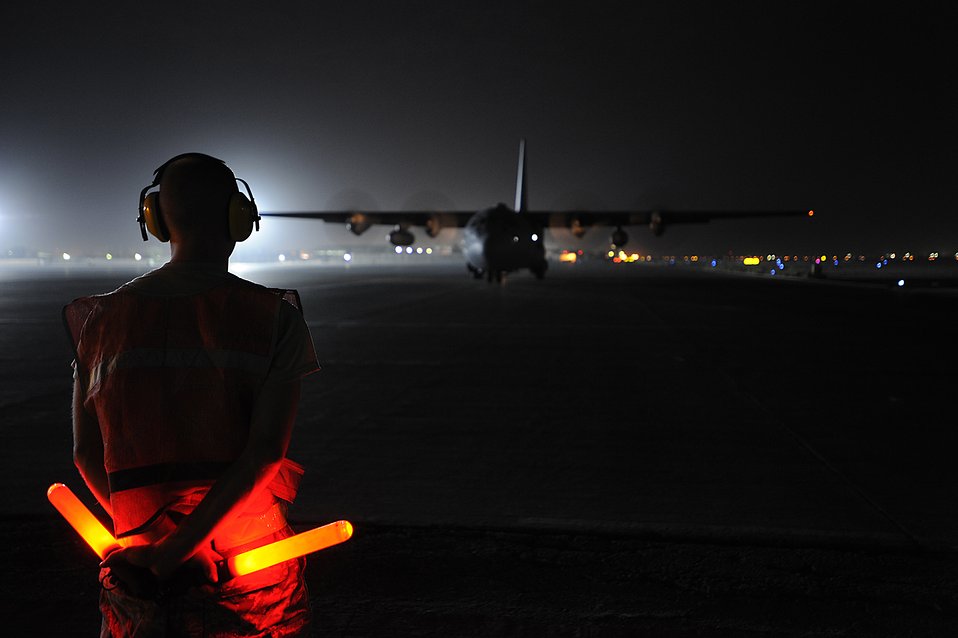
Working by moonlight

Senior Airman Luke Gills directs an Iraqi air force C-130 Hercules Oct. 11 at Joint Base Balad, Iraq. The aircraft, assigned to 23rd Squadron, was on a cargo resupply mission with members of the U.S. Air Force 370th Air Expeditionary Advisory Squadron. Airman Gills is a transient alert marshaller assigned to the 332nd Expeditionary Maintenance Squadron and deployed from Kirtland Air Force Base, N.M. His hometown is Fairfield, Pa.